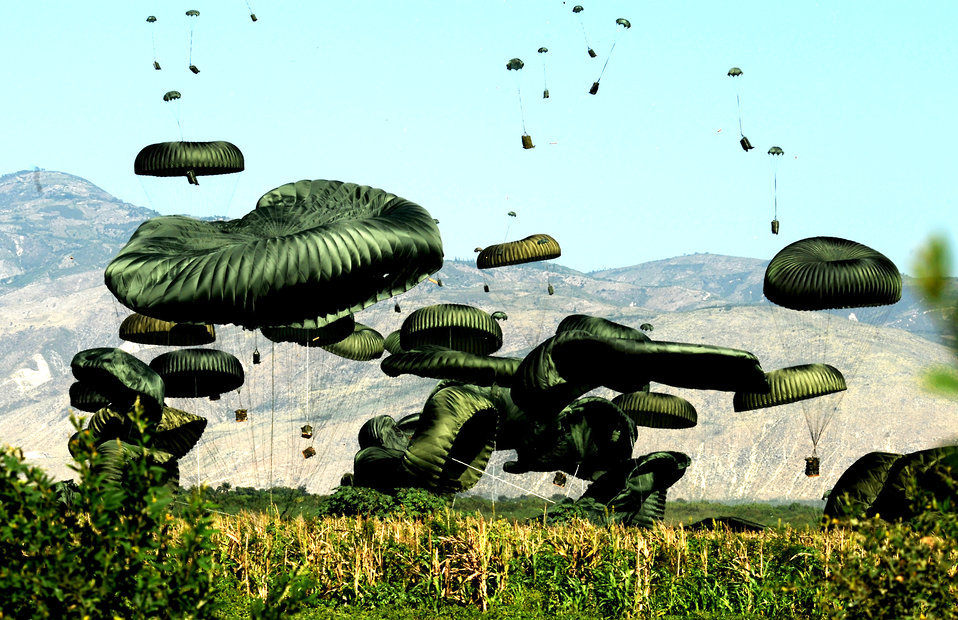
Needed supplies arrive

Bundles of food and water are air delivered Jan. 23, 2010, to the outlying area of Port-au-Prince, Haiti. Approximately 14,000 bottles of water and 14,500 Meals, Ready to Eat were included in the air delivery.